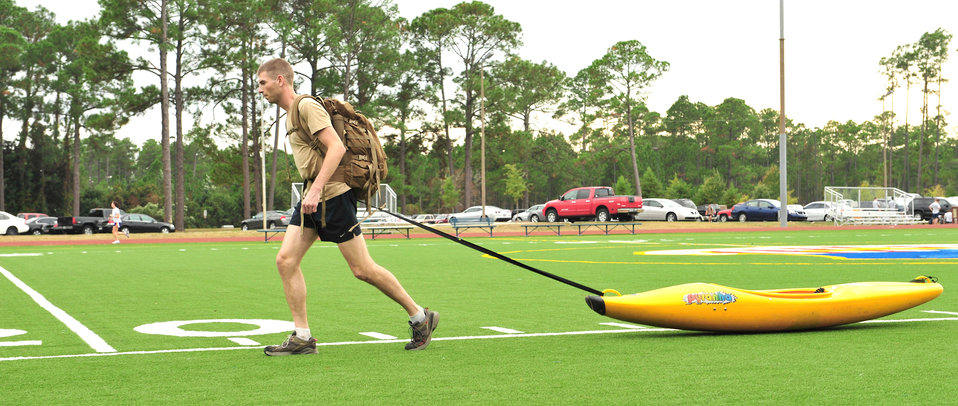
Airmen prepare for Antarctic climb

Capt. Graydon Muller pulls a kayak across a field Oct. 28, 2010, at Hurlburt Field, Fla., to simulate pulling a supply sled in preparation for an upcoming mountaineering expedition to climb Vinson Massif, the highest mountain in Antarctica. Captain Muller and Capt. Rob Marshall, a member of the 8th Special Operations Squadron, depart Nov. 24, 2010, to climb the 16,076 foot mountain as part of the U.S. Air Force Seven Summits Challenge, an effort for Air Force members to climb the highest mountain on each continent. Captain Muller is a member of the 6th Special Operations Squadron at Hurlburt Field.